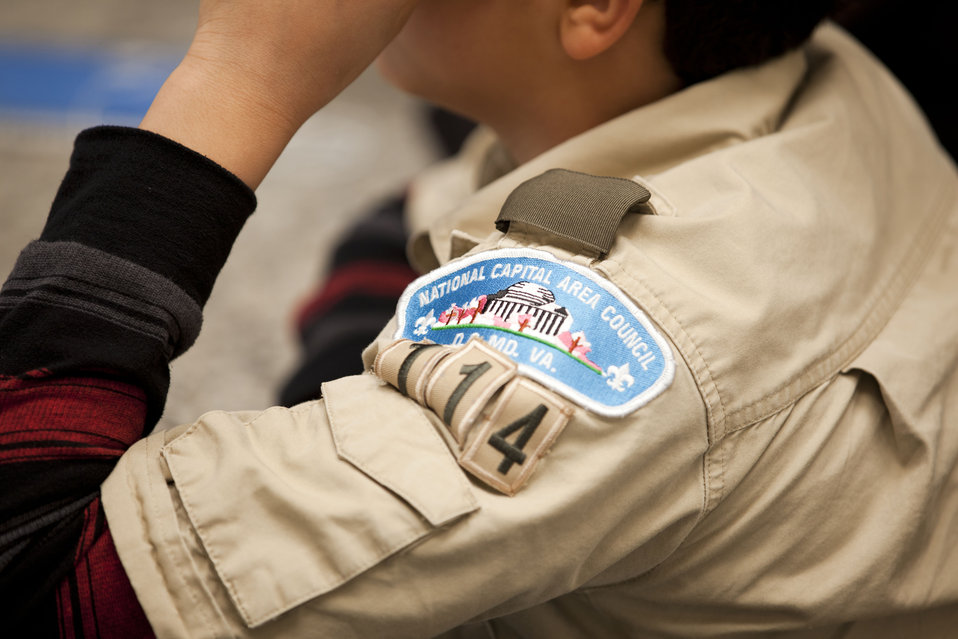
A Boy Scout attends a class to earn a merit badge for Energy Action Month.